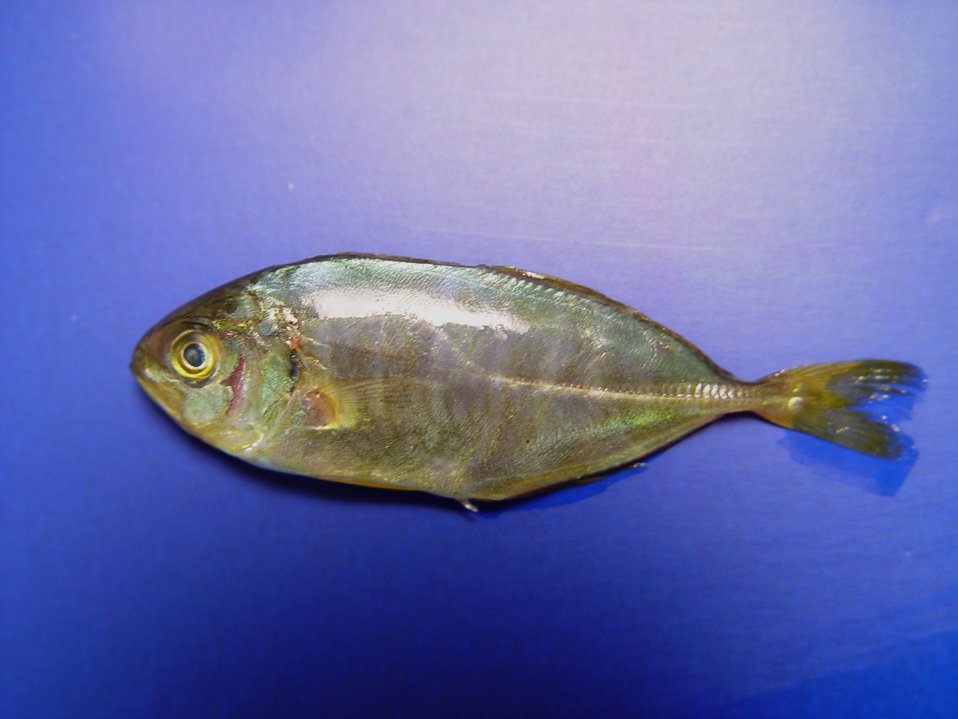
Older banded rudderfish ( Seriola zonata )